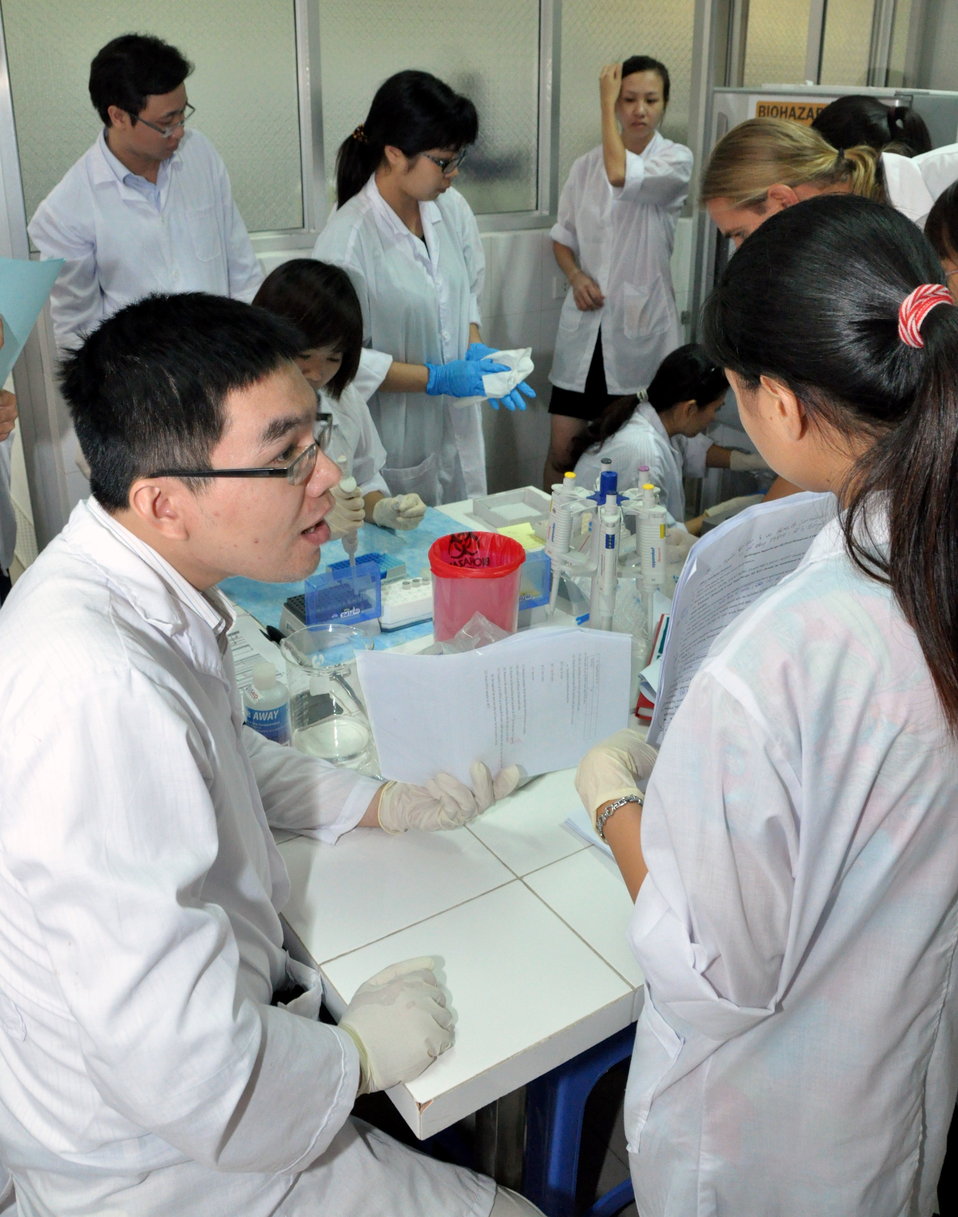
Animal virus detection lab training in Hanoi

Trainees learn how to detect viruses in Hanoi under USAID program.